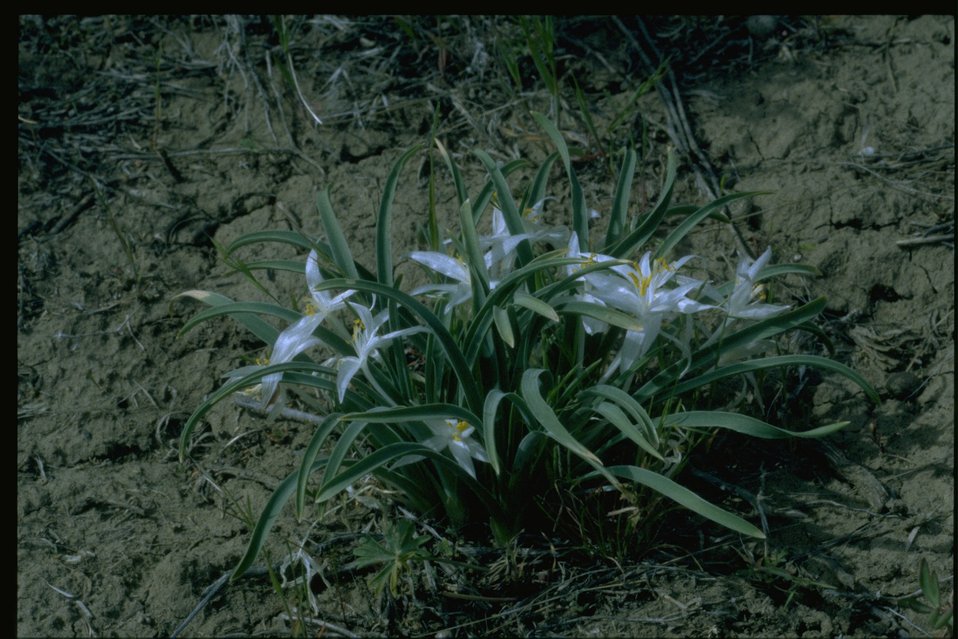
Medium shot of Star Lily; Sand Lily; Mountain Lily (Leucocrinum montanum).